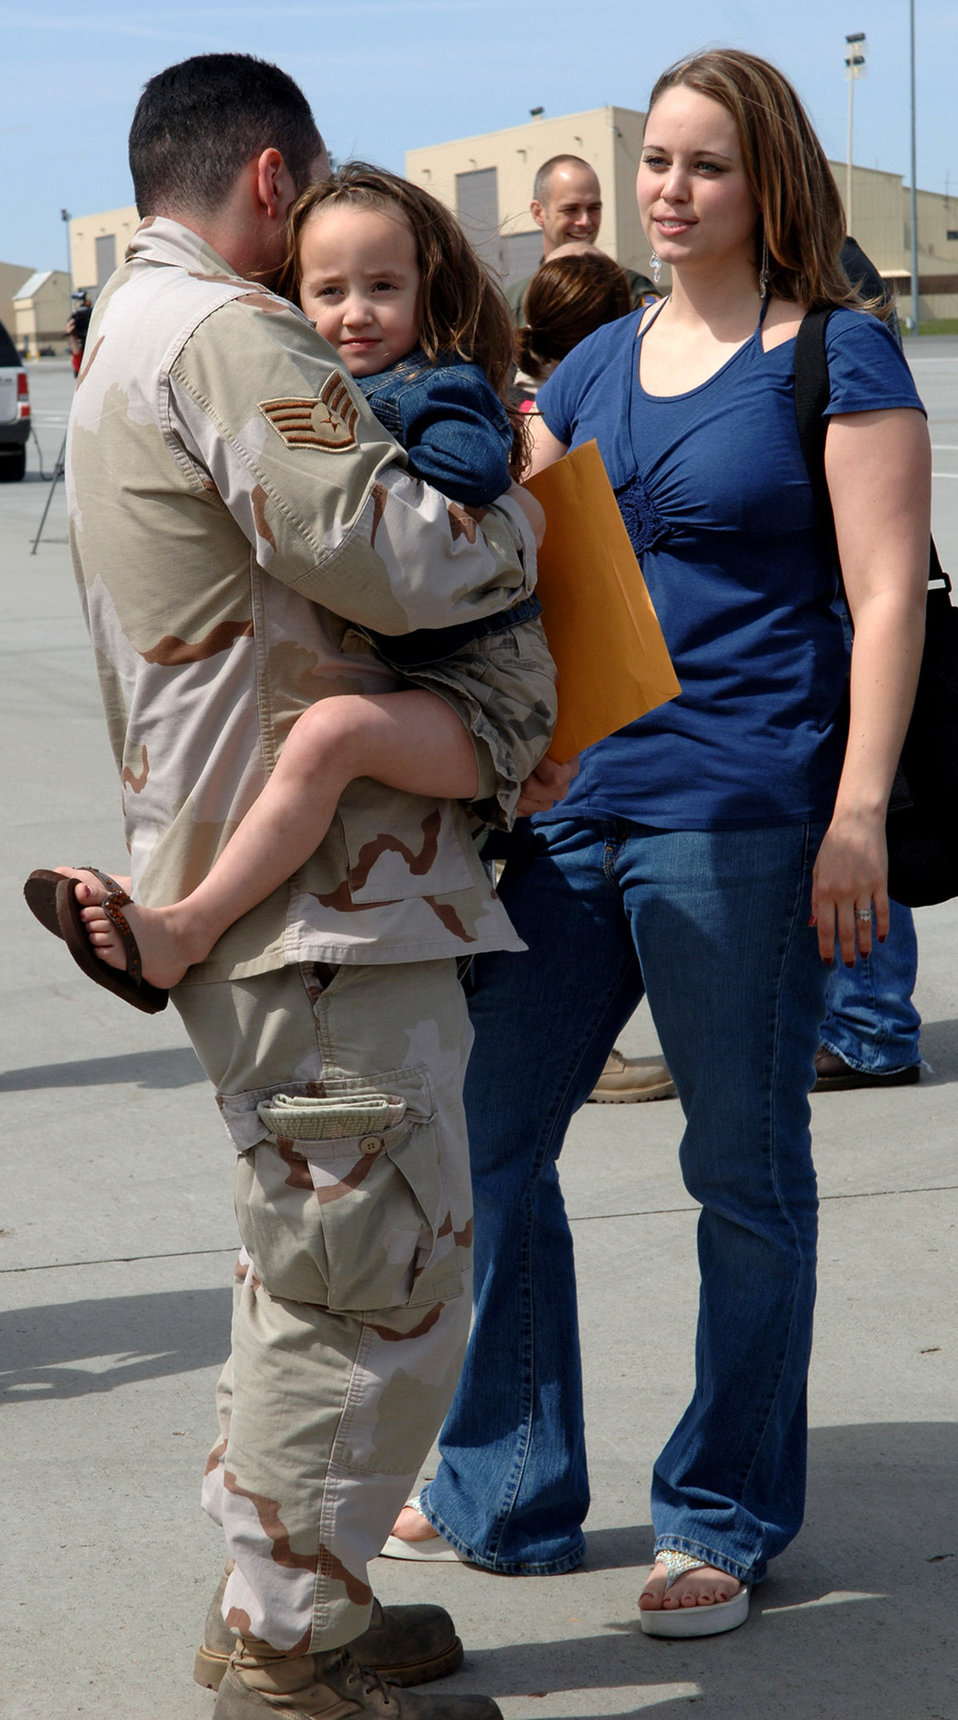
Fairchild Airmen reunite with family after deployment

Jasmine Hernandez receives a big hug from her father, Tech. Sgt. Juan Hernandez, just minutes after his return April 30 to Fairchild Air Force Base, Wash. Sergeant Hernandez returned with 44 other Airmen from Manas Air Base, Kyrgyzstan.